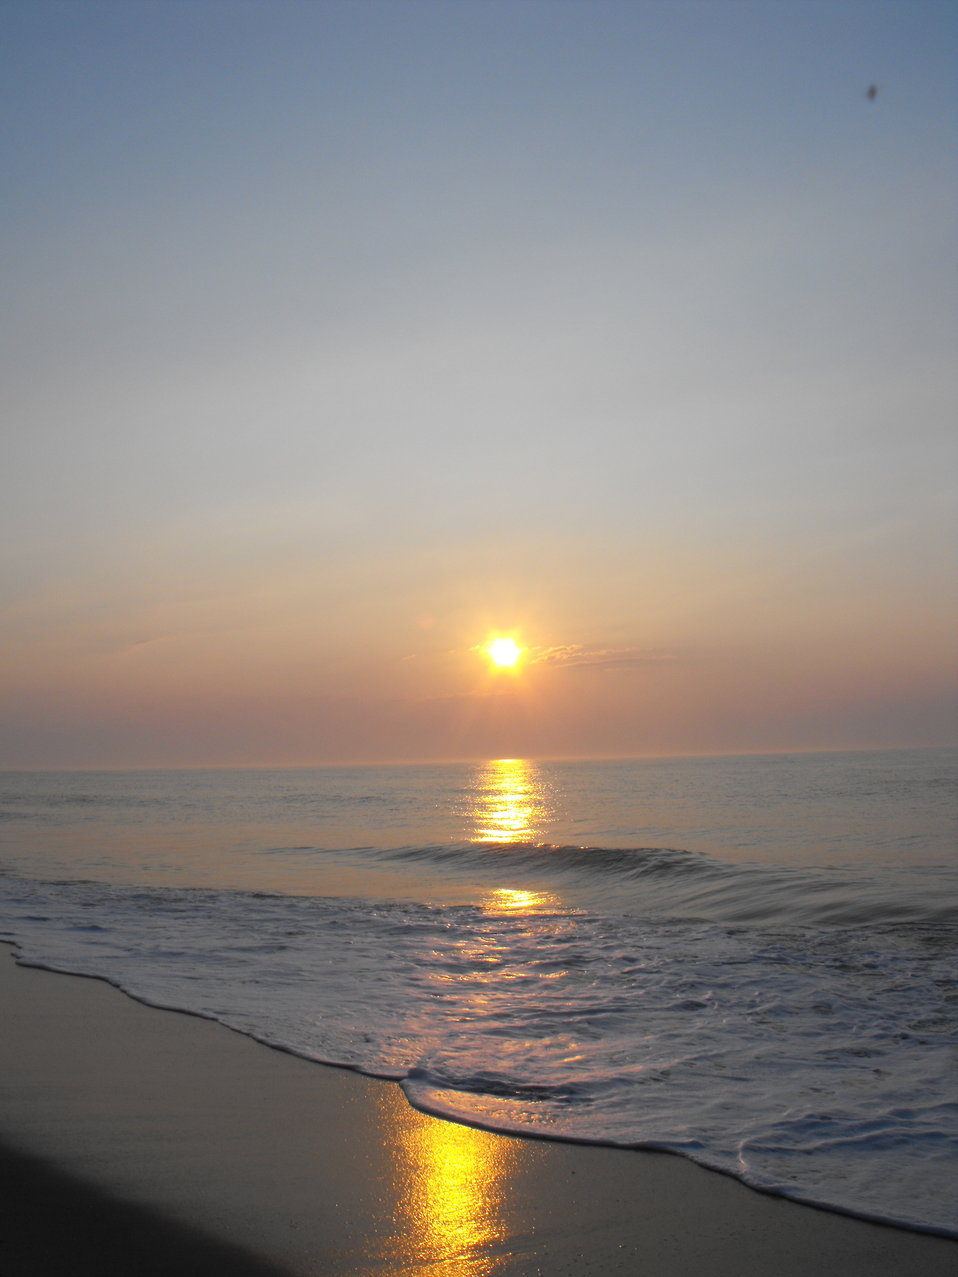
Sunrise over the beach at Chincoteague National Wildlife Refuge / Assateague Island National Seashore.